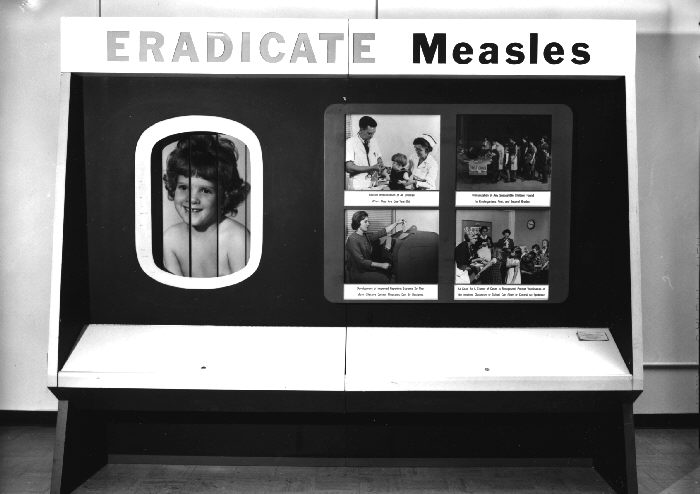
Measles immunization campaign poster.